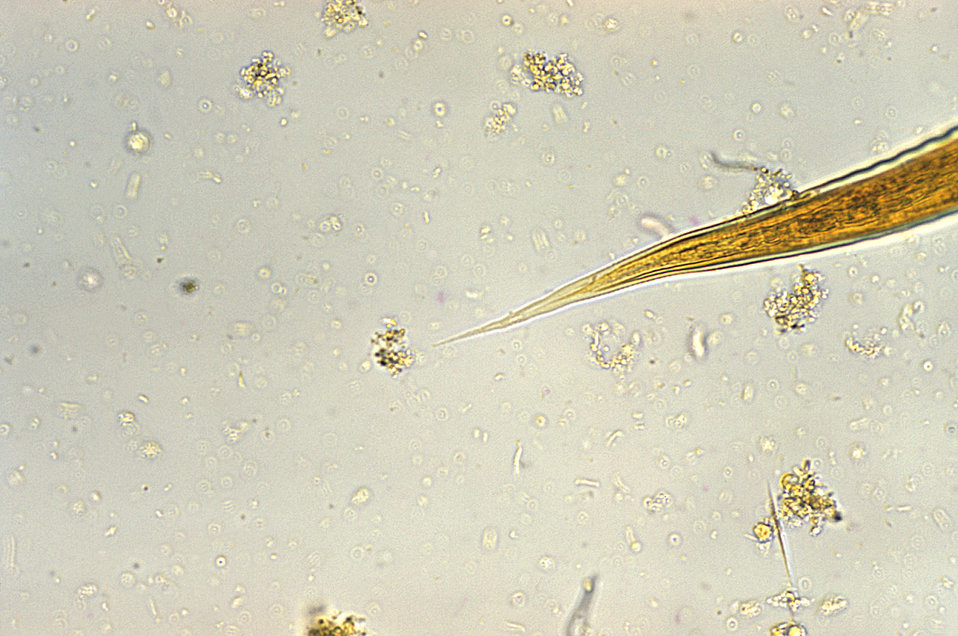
Magnified 400X, this photomicrograph revealed some of the ultrastructural morphology exhibited by the caudal end, i.e., tail, of a hookworm filariform larva.What is hookworm?